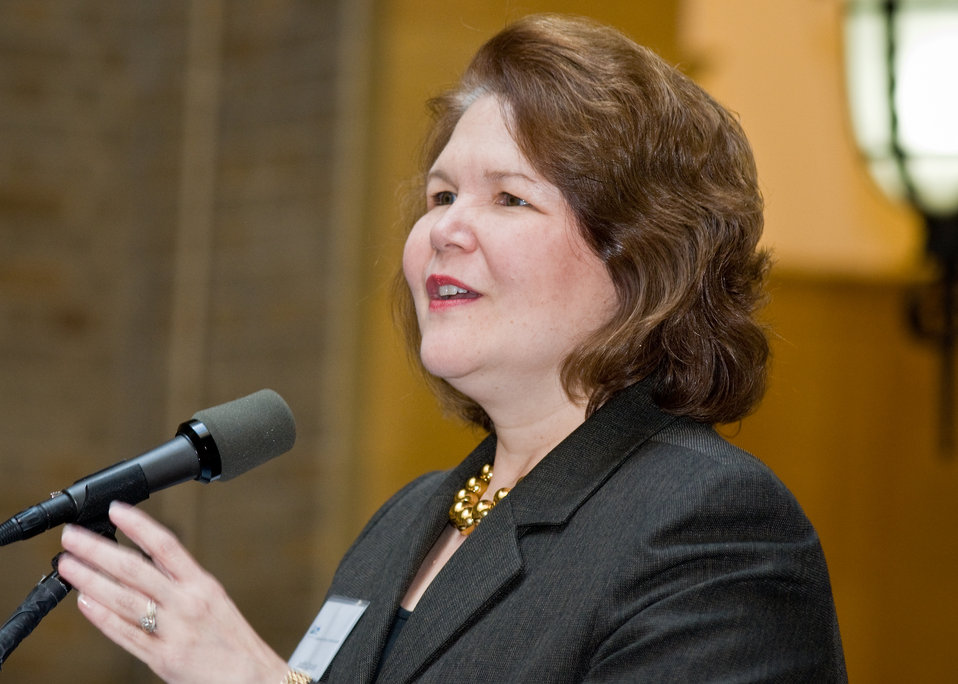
Judith Canales, Administrator, Rural Business and Cooperative Service welcomes and offers opening comments on the celebration of October as National Co-op Month at an event at the Department of Agriculture, Tuesday, October 5, 2010 in Washington, DC. USDA Photo 10di1517-02 by Bob Nichols.